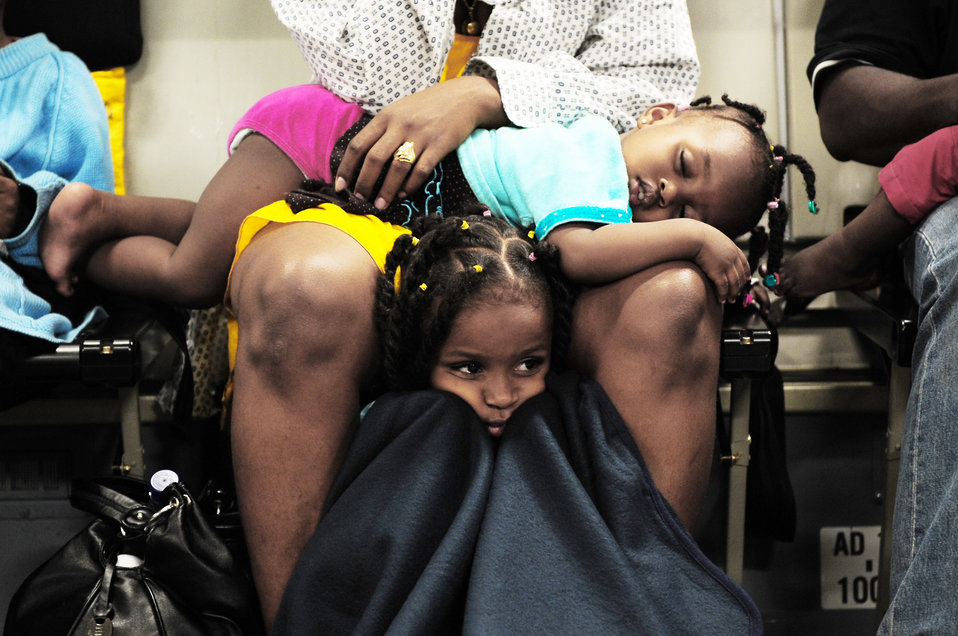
Haiti Earthquake Relief

Haitian-Americans sit onboard a C-17 Globemaster III Jan. 18, 2010, flying from Toussaint L'Ouverture International Airport in Port-au-Prince, Haiti to Orlando Sanford International Airport, Fla. The C-17 crew is assigned to the 729th Airlift Squadron at March Air Reserve Base, Calif. The aircraft is from the 452nd Air Mobility Wing at March ARB.